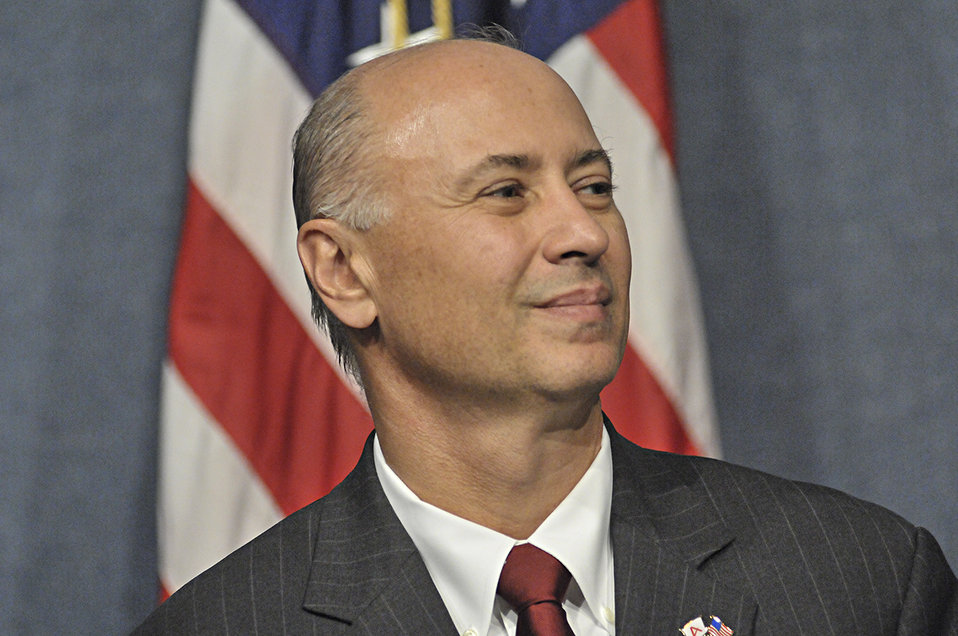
Panel: Increasing Minority Participation in the Energy Sector

Mauro Gregorio, President of DOW Chemical, speaks on September 24, 2013 at the Minorities in Energy Initiative launch.